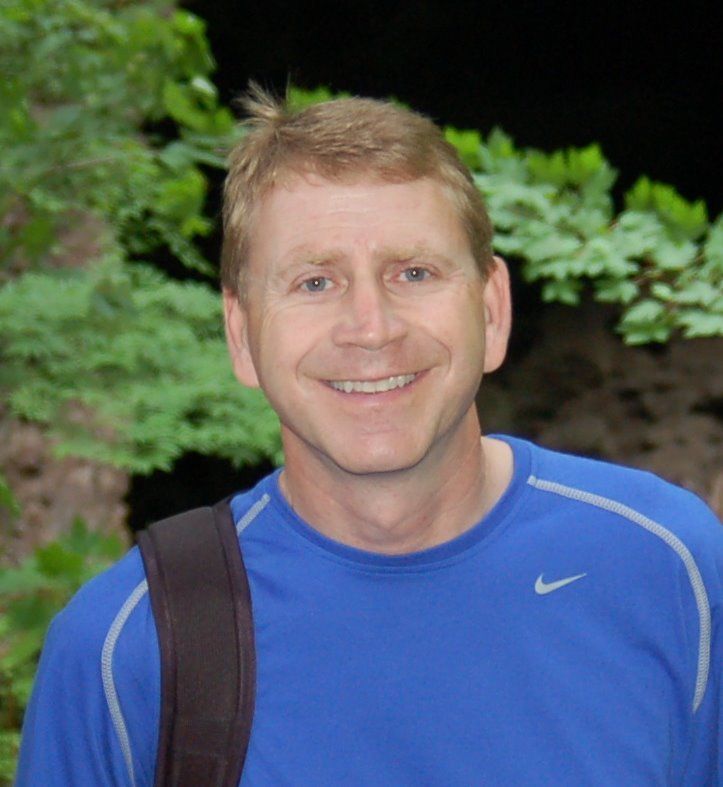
Mendel Stewart

Named chief of the Division of Budget, Performance and Workforce for the National Wildlife Refuge System in spring 2012. Former manager (2005-2012) of the San Francisco Bay National Wildlife Refuge Complex. Before that, manager of Merritt Island National Wildlife Refuge in Florida, Hobe Sound National Wildlife Refuge in Florida and the San Diego National Wildlife Refuge Complex,